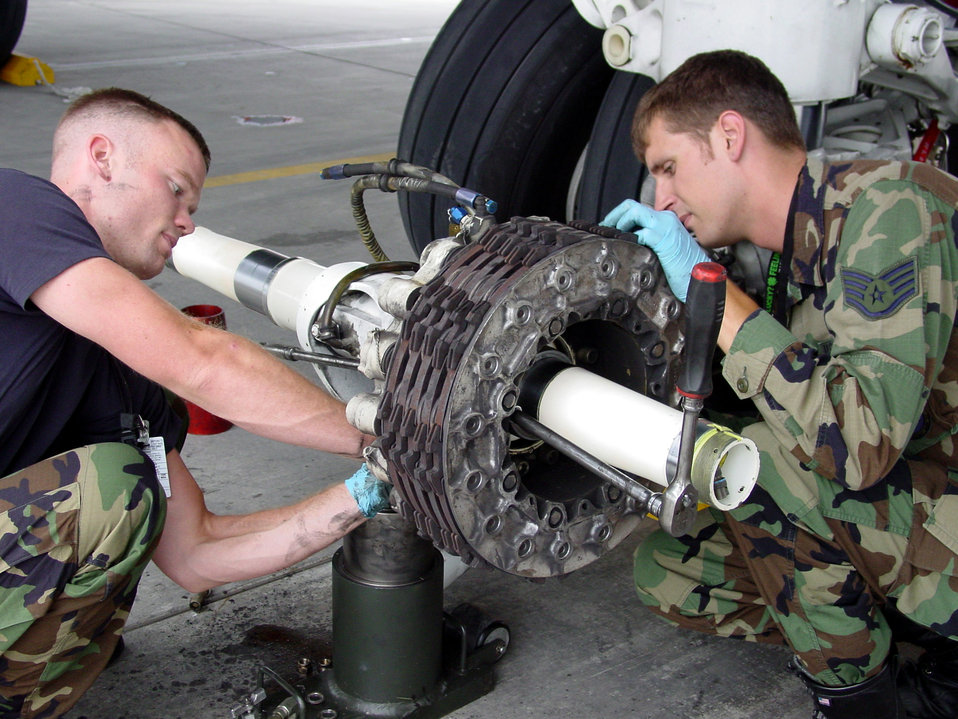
Give 'em a 'brake'

PORTLAND INTERNATIONAL AIRPORT, Ore. -- Staff Sgts. Matt Stark (left) and Geoffrey Corey change a brake on a KC-135 Stratotanker here. The aircraft's primary mission is air refueling. The Airmen are assigned to the 939th Aircraft Maintenance Squadron.